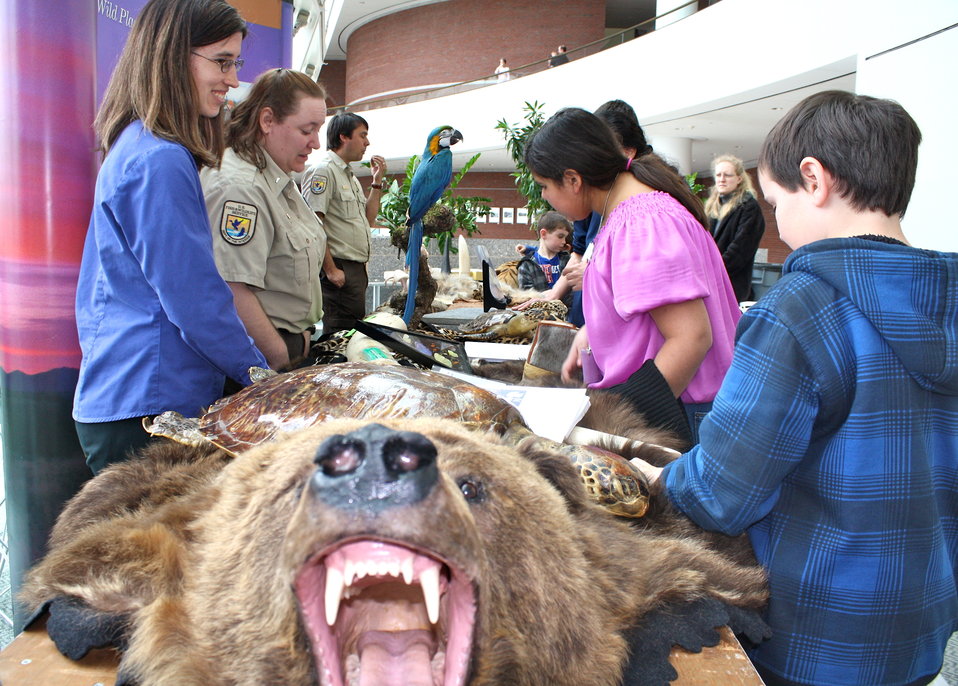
USFWS Table